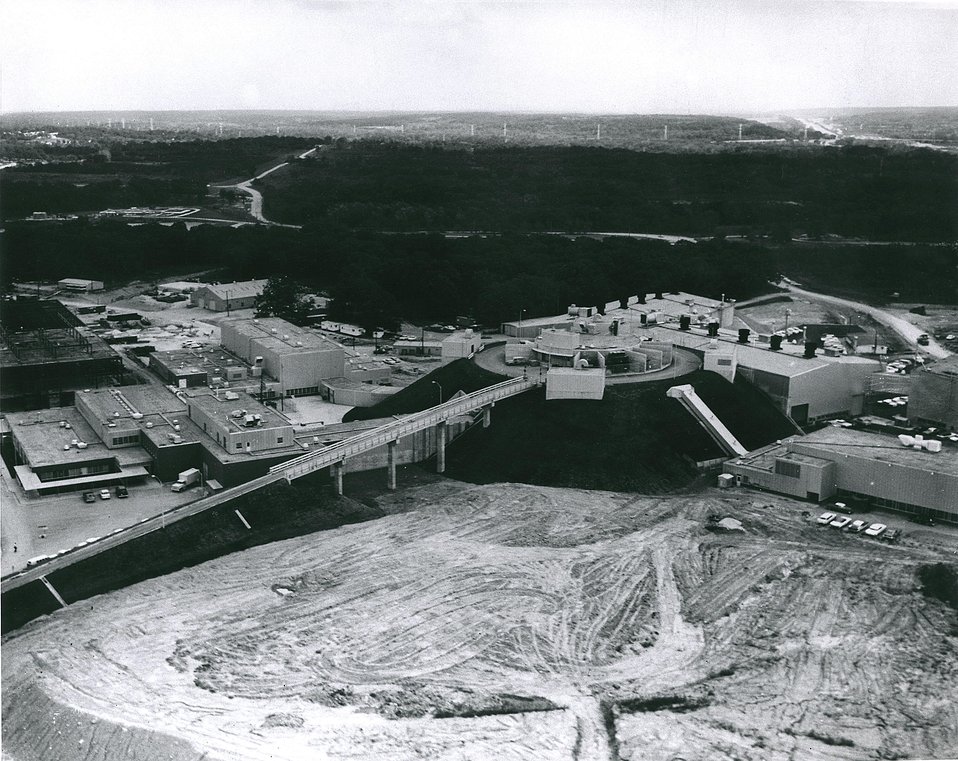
Aerial close-up of main magnet area of the ZGS site at Argonne. c.1965